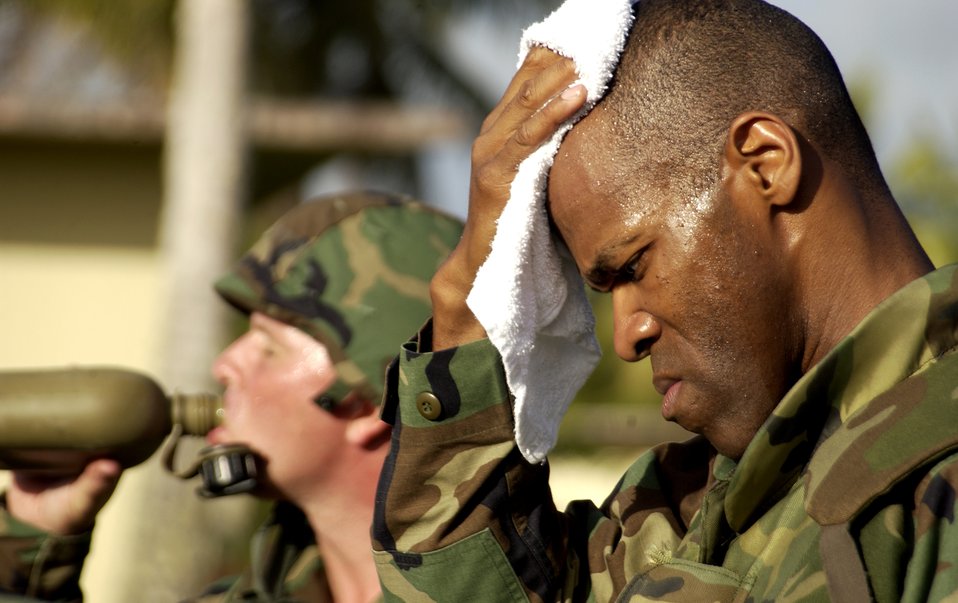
GIRRE

Capt. John Key wipes away the sweat running down his forehead during a break in convoy and weapons familiarization training, which is part of the Guam Initial Readiness Response Exercise, or GIRRE, Tuesday, March 14, 2006. The GIRRE is an annual island-wide exercise between Andersen Air Force Base and Naval Marianas to train on war plan deployments and joint disaster response skills. During the GIRRE, 300 Air Expeditionary Force Airmen will participate under conditions they may see when deployed. The mission of this exercise is readiness and to prepare AEF Airmen with skills they can use to keep alive downrange while working with Navy and Government of Guam agencies on disaster response to save lives at home.